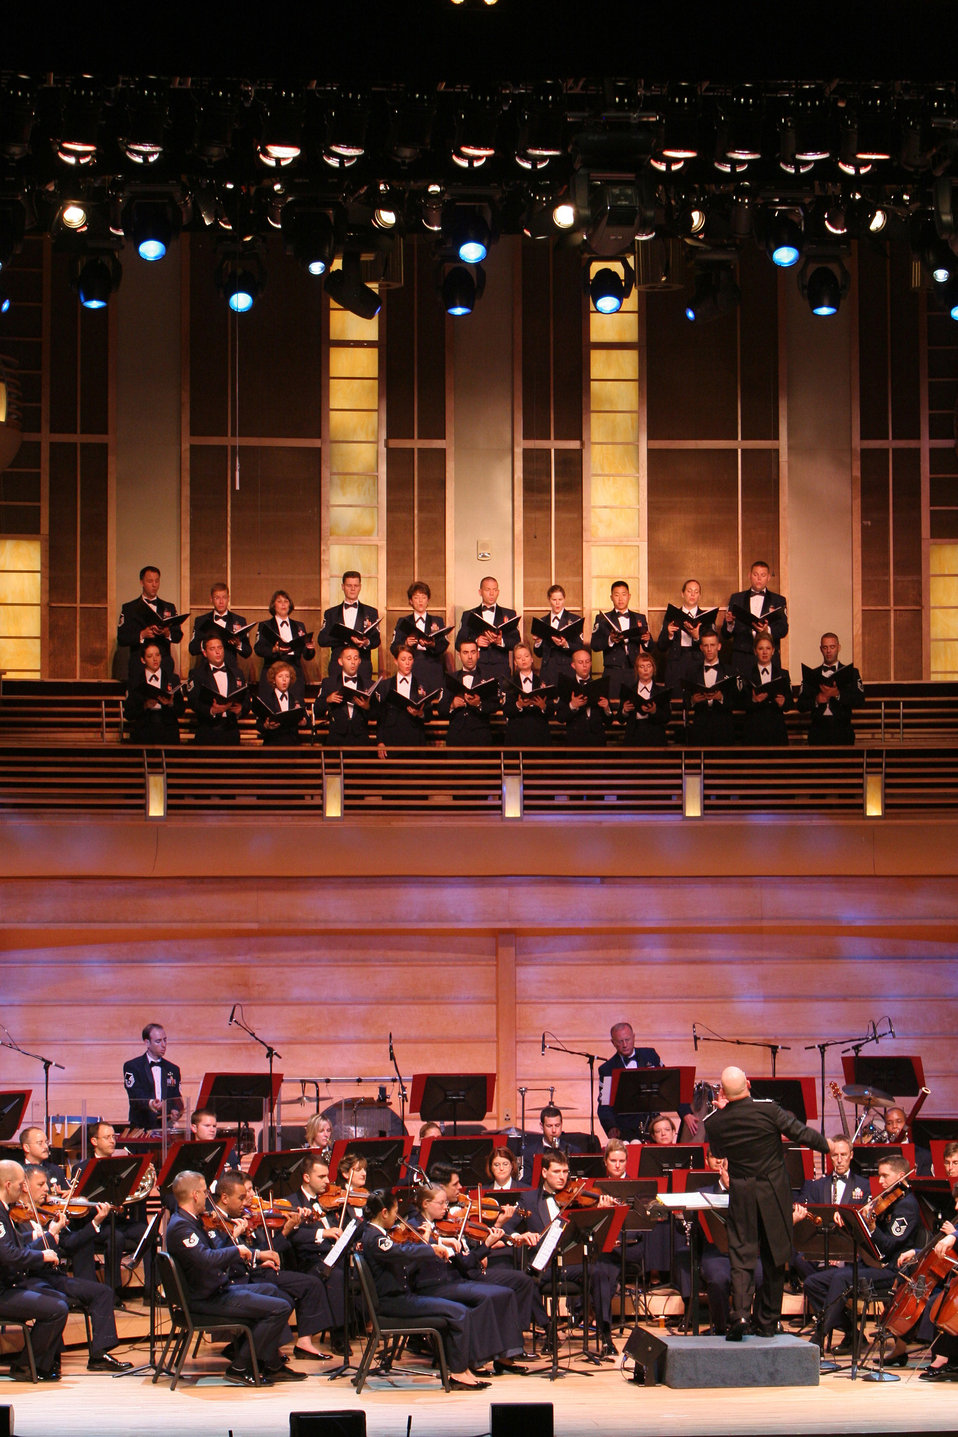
AF anniversary concert airs nationwide Nov. 2

The official chorus of the United States Air Force, the Singing Sergeants perform a musical setting of the poem High Flight during a gala concert celebrating the 60th Anniversary of the Air Force June 30 at the Music Center at Strathmore in Bethesda, Md. The program was produced for national broadcast and will air on public television stations across the United States on Veteran's Day 2007.